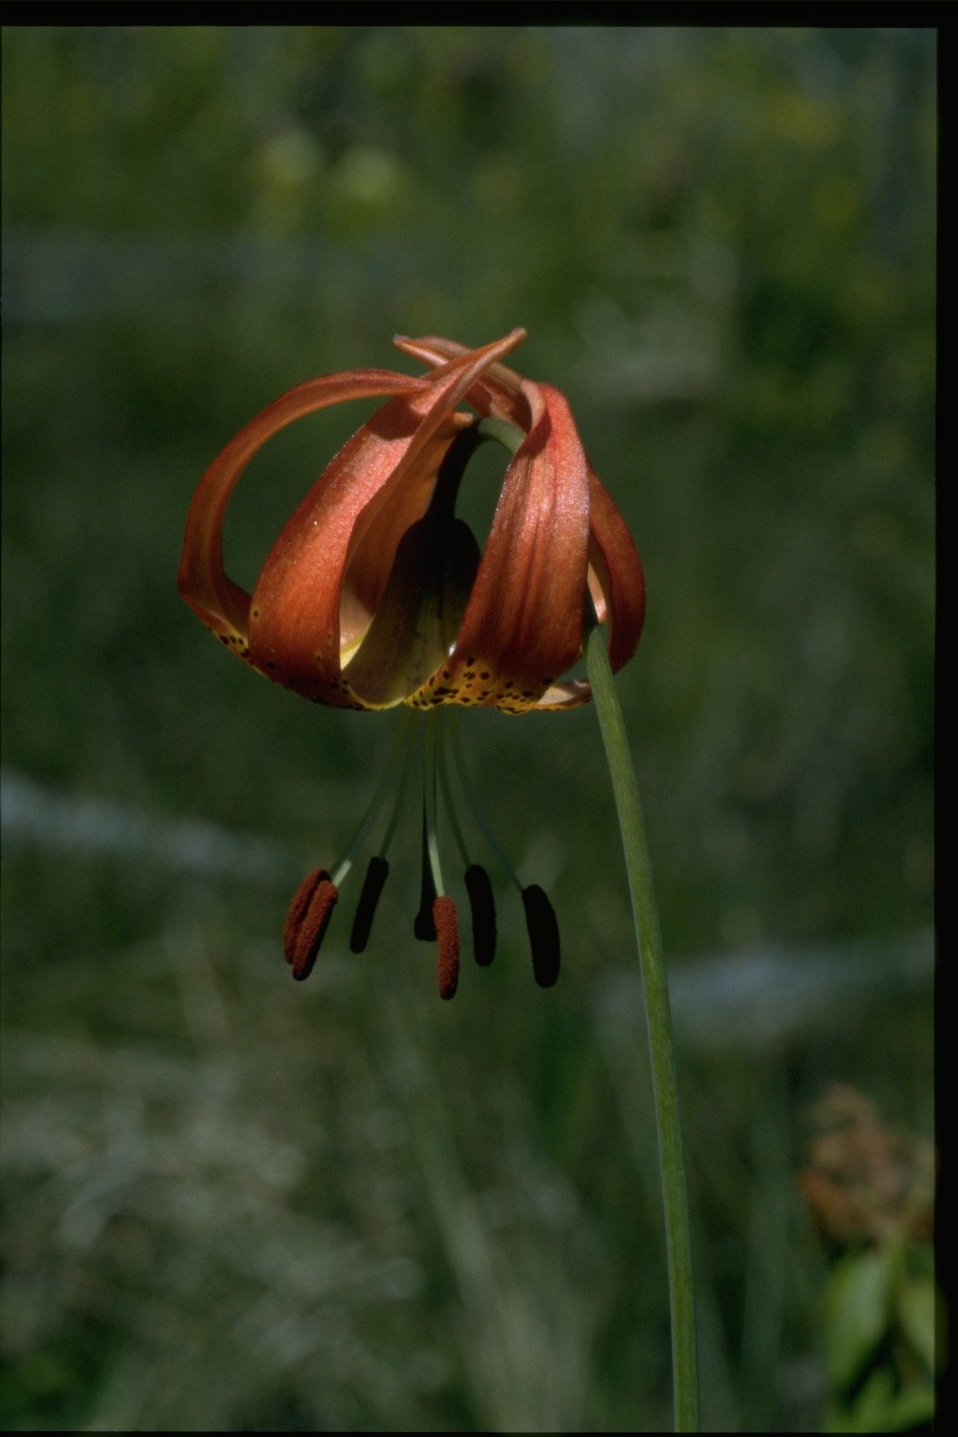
Closeup shot of Lilium pardalinum var vollmeri.